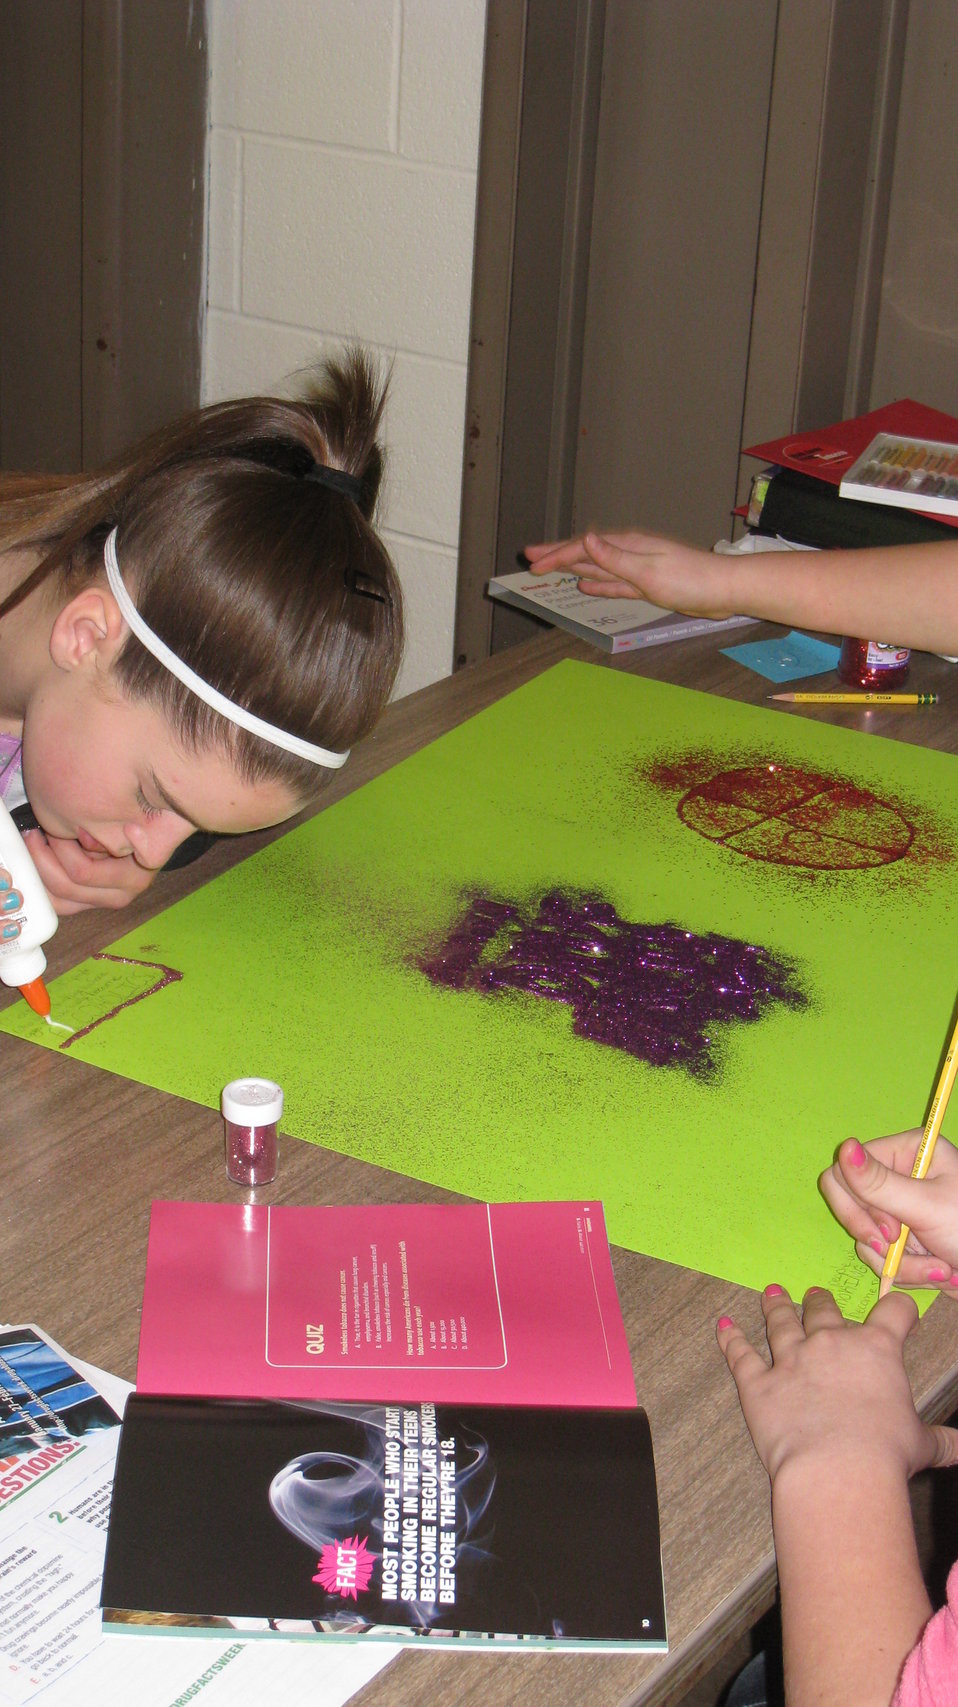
NDFW 2014:YLC Style!

Teenagers from the Van Buren County SAFE Coalition's, Youth Leadership Council (YLC) in Keosauqua, Iowa participate in various events during National Drug Facts Week, 2014.